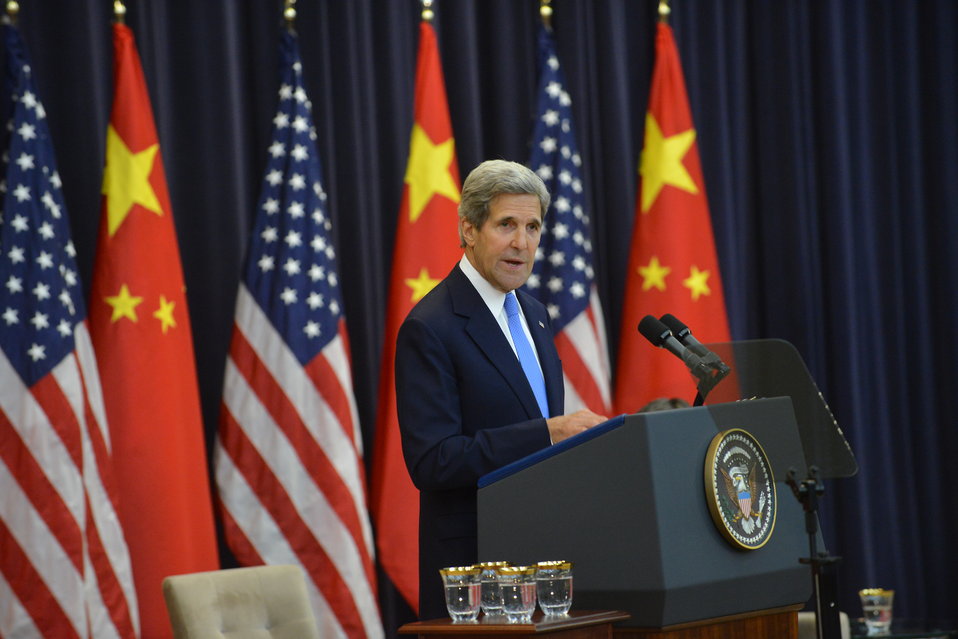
Secretary Kerry Delivers Remarks at the Joint Opening Session

U.S. Secretary of State John Kerry delivers remarks at the U.S.-China Strategic and Economic Dialogue Joint Opening Session in the Dean Acheson Auditorium at the U.S. Department of State in Washington, D.C., on July 10, 2013.